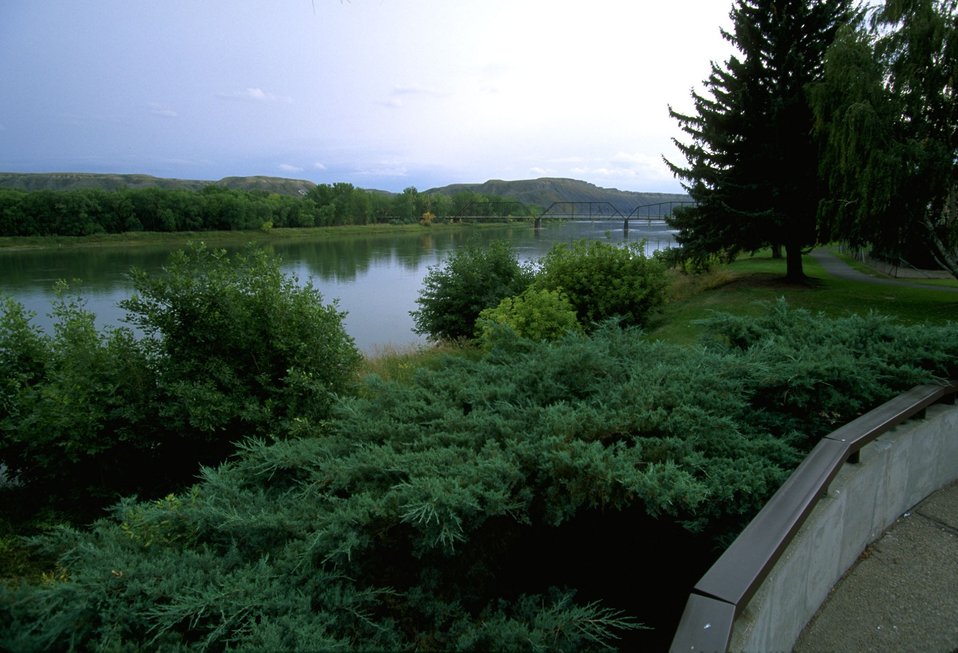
Historic bridge crossing the Missouri River at Fort Benton